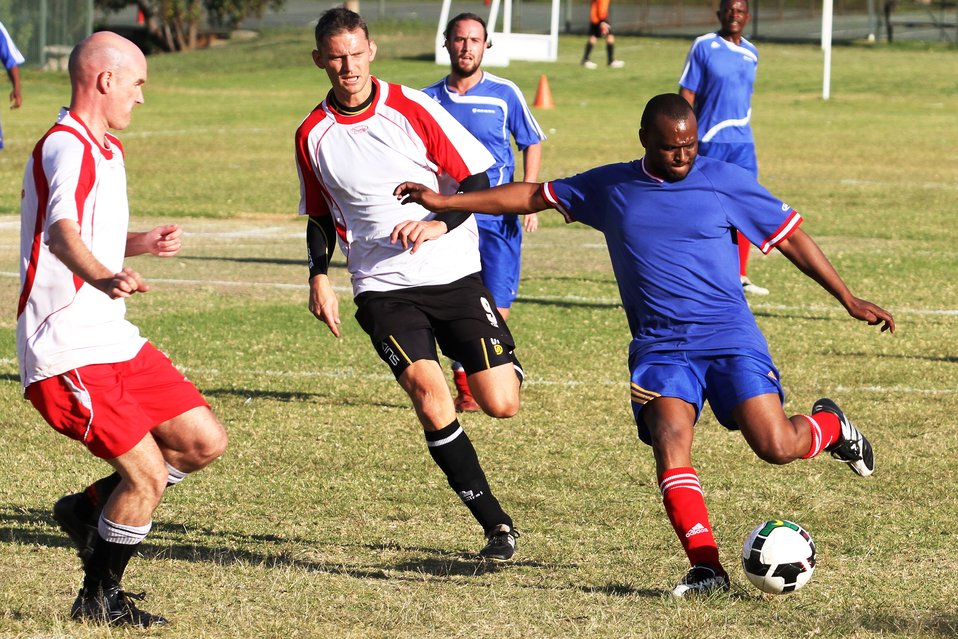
U.S. Embassy Pretoria Plays the British High Commission

The U.S. Embassy Pretoria plays the British High Commission in a match on May 28, 2010, in Pretoria, South Africa. The match was part of a series of challenge events aimed at building the friendly rivalry and excitement before the World Cup match between the U.S. National Team and the England National Team in Rustenburg, South Africa, on June 12, 2010.